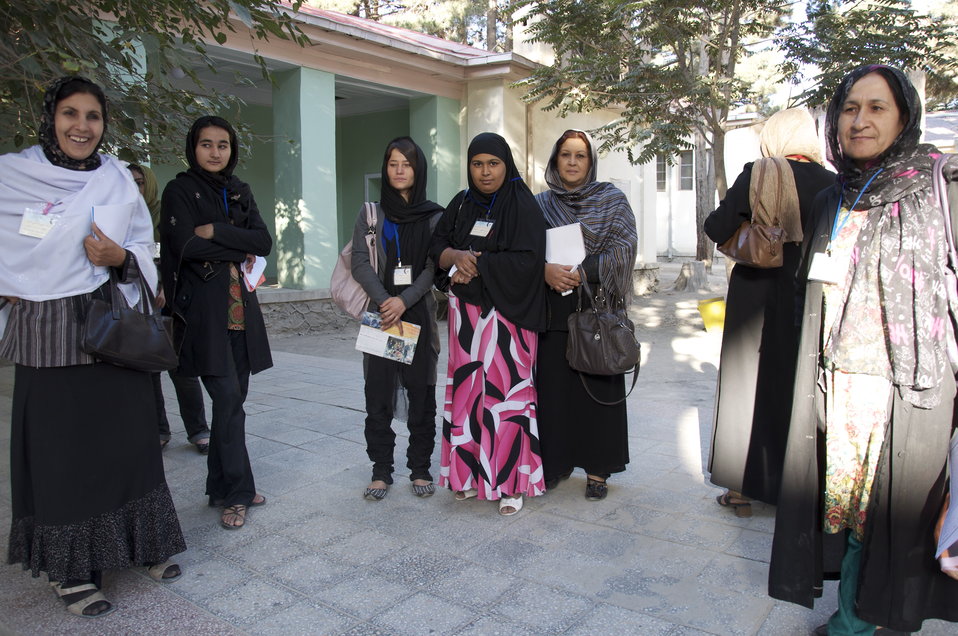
Female Election Observers in Kabul